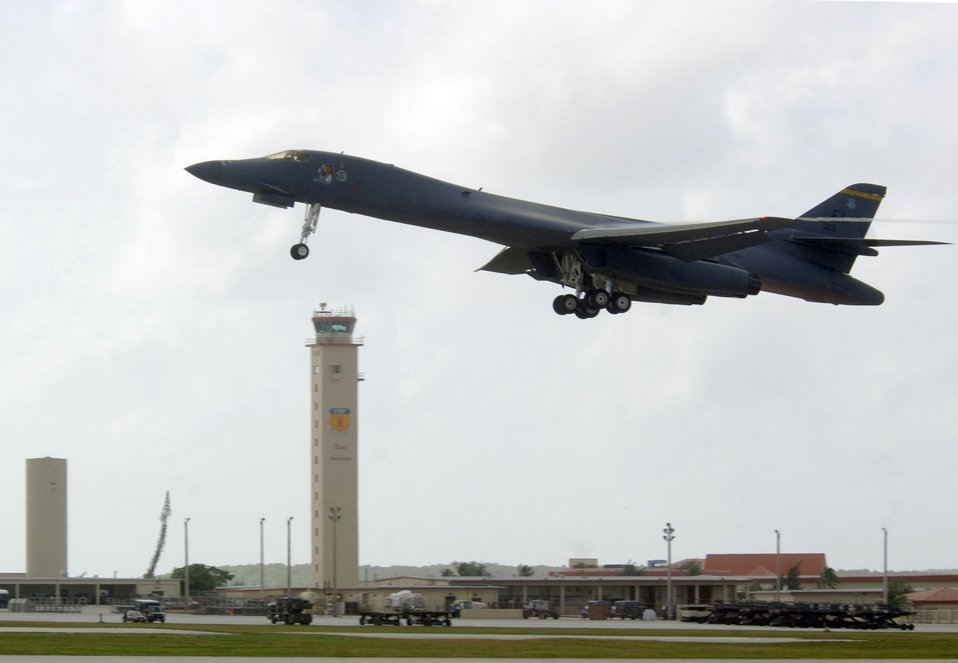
Aircraft control

ANDERSEN AIR FORCE BASE, Guam (AFPN) -- A B-1B Lancer takes off from here during an air expeditionary force deployment mission. The aircraft belongs to the 34th Bomb Squadron at Ellsworth Air Force Base, S.D. The unit is here to provide the U.S. Pacific Command a continuous bomber presence in the Asia-Pacific region.